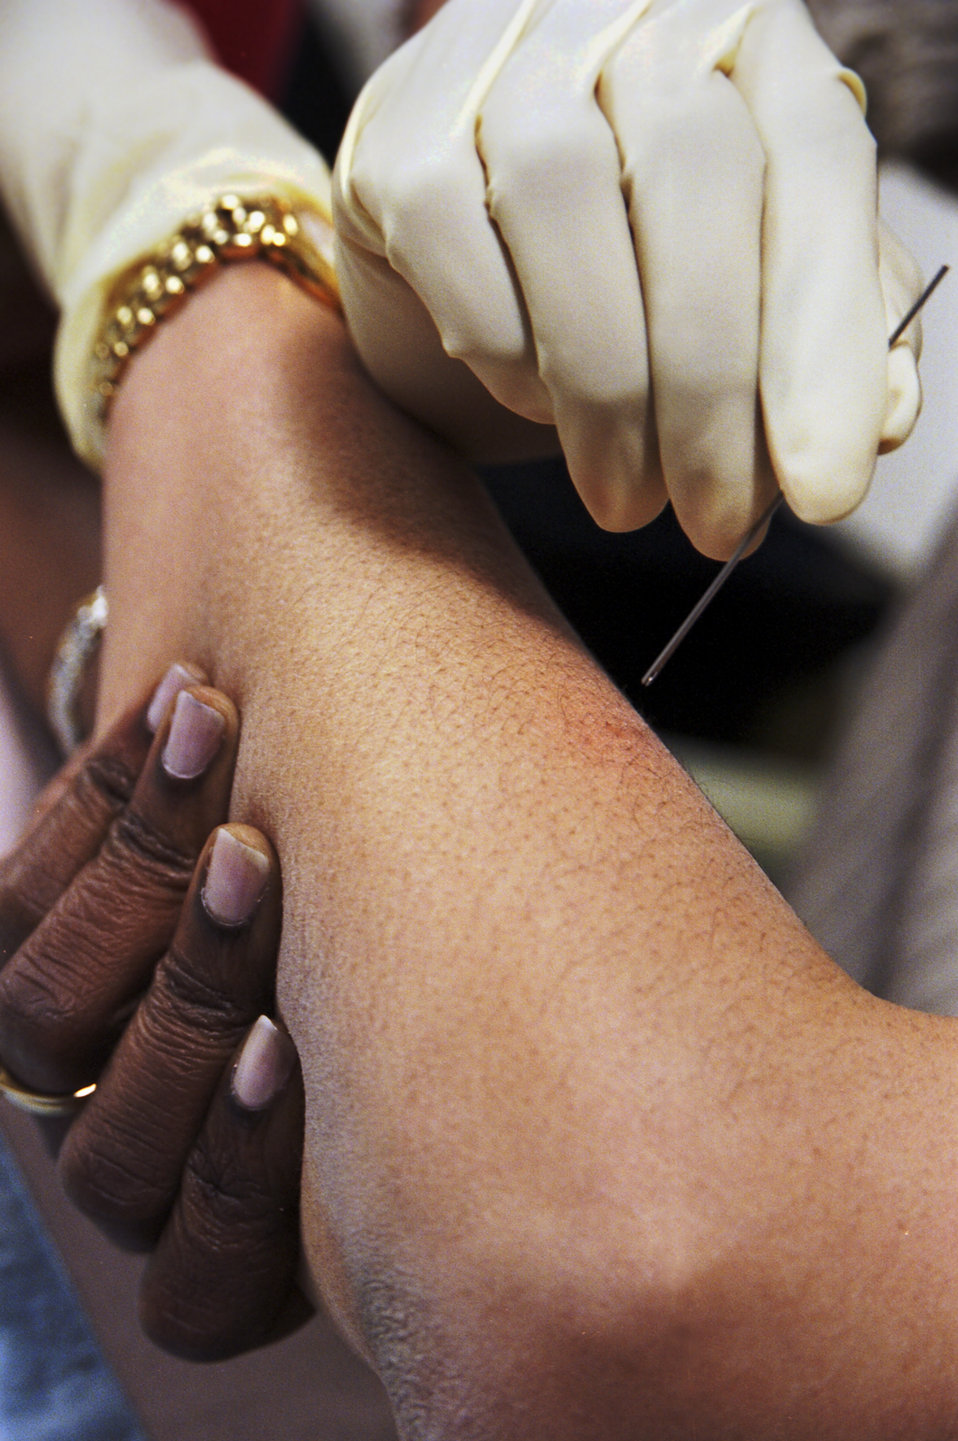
CDC Clinician demonstrates the use of a bifurcated needle during the 2002 Smallpox Vaccinator Workshop.